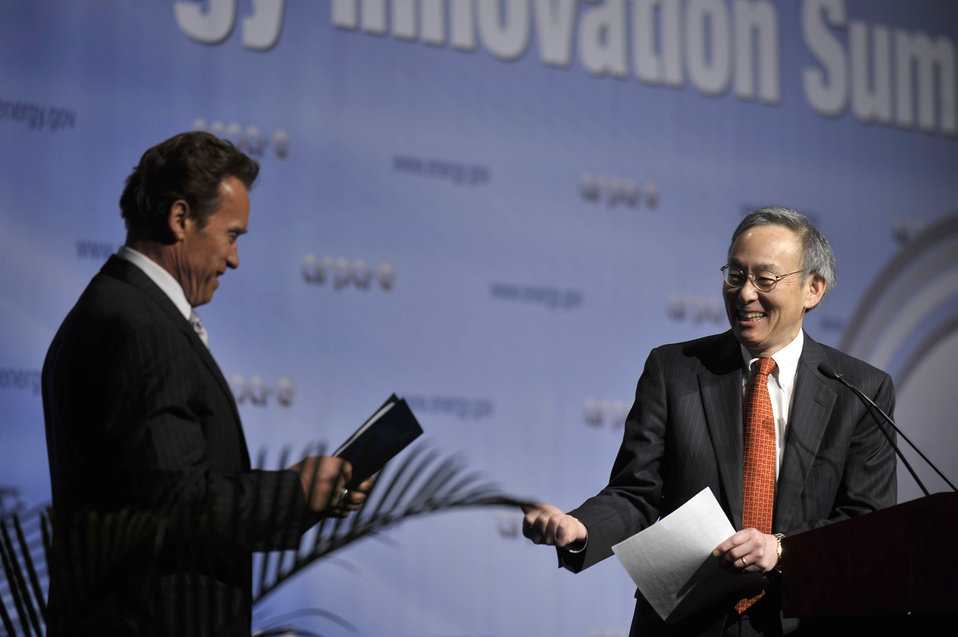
ARPA-E Energy Innovation Summit 2011, 74 of 83

Steven Chu, Secretary, United States Department of Energy welcomes Arnold Schwarzenegger, Former California Governor, to the podium.